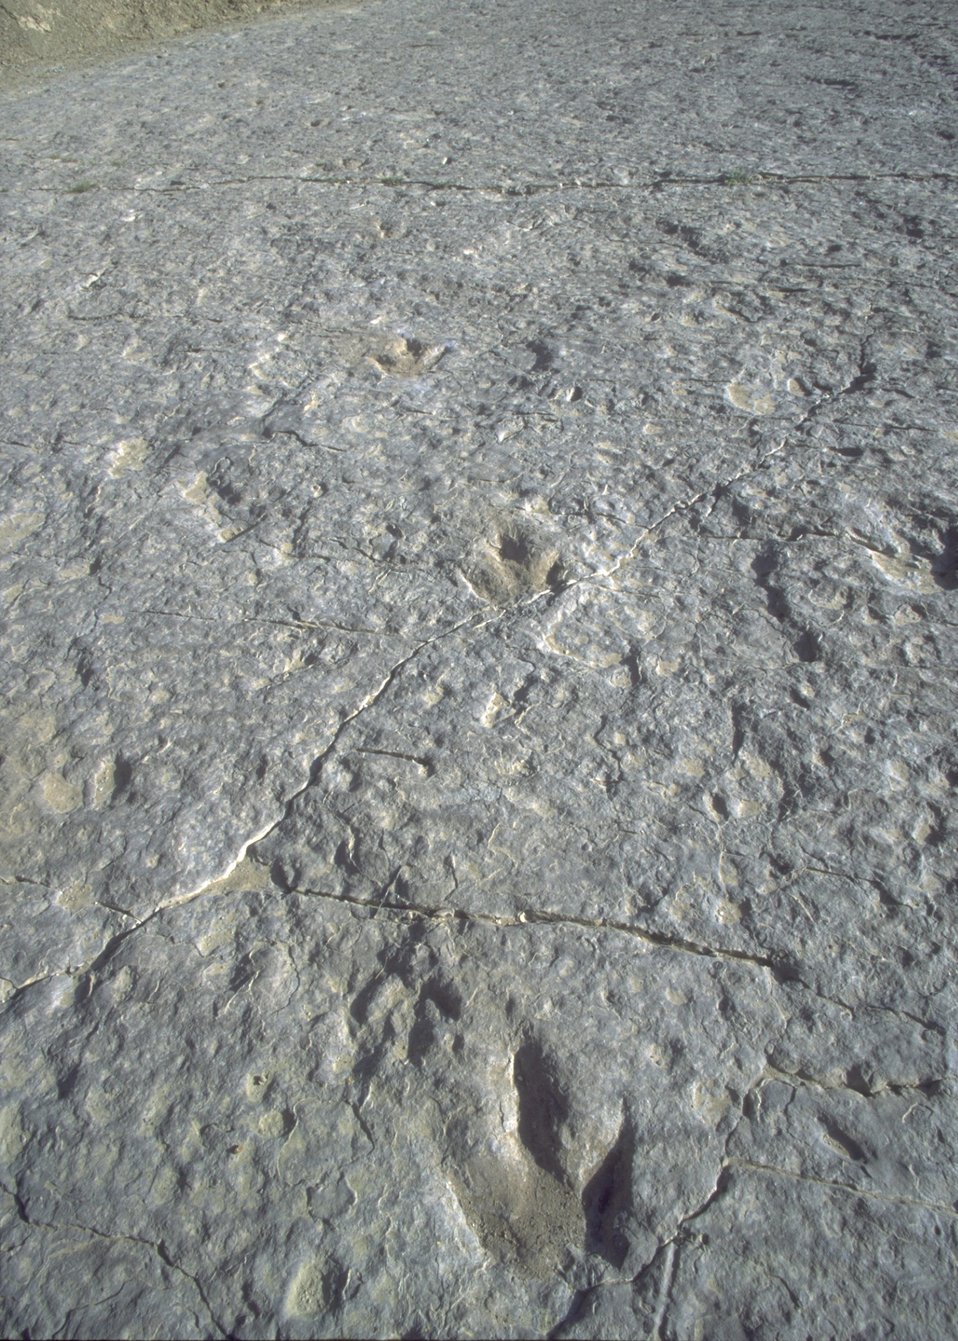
Series of dinosaur tracks at the Red Gulch Dinosaur Tracksite, Worland Field Office.